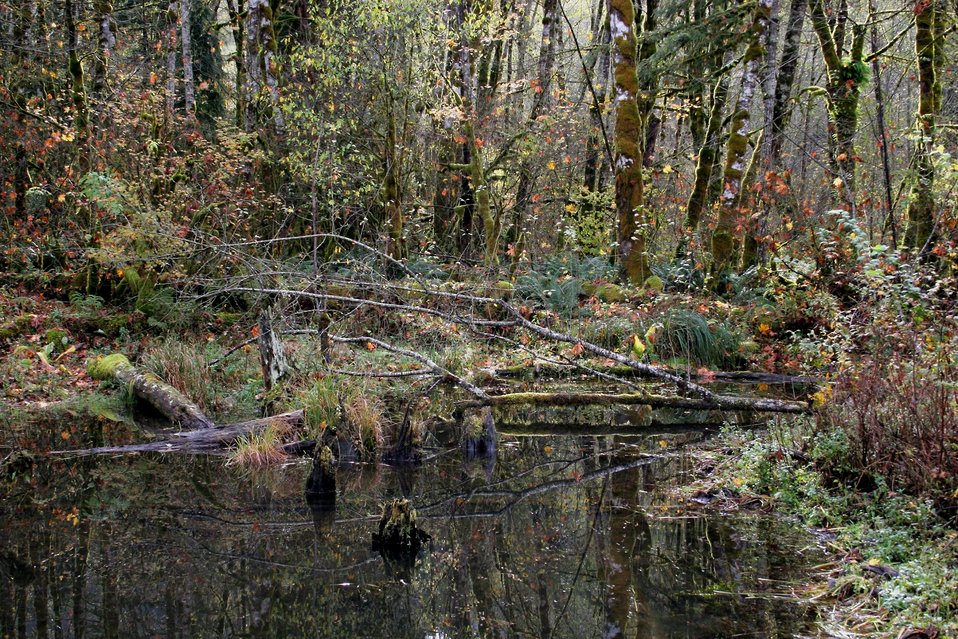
Fall colors at BLM's Wildwood Recreation Site.